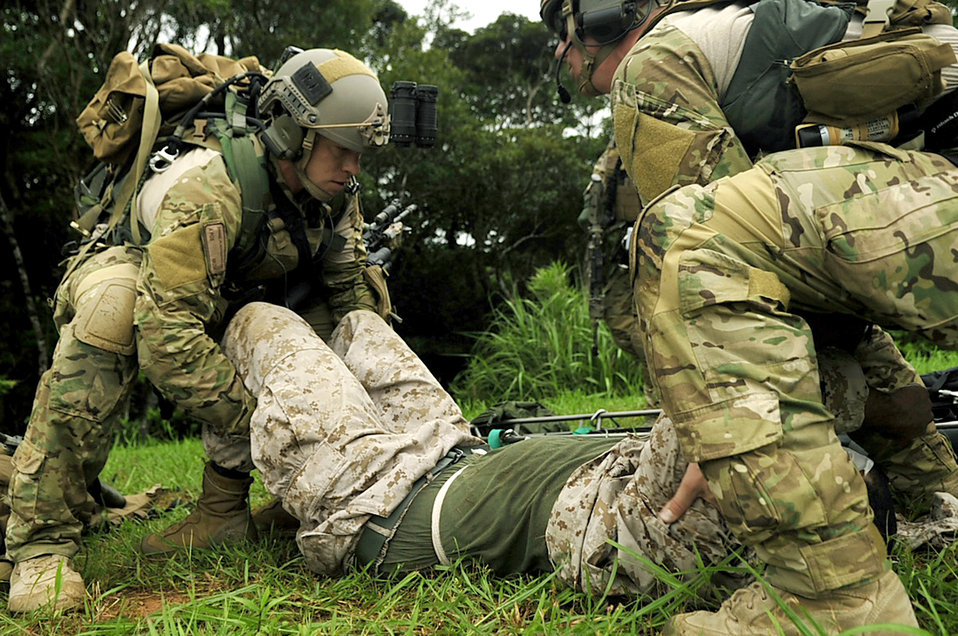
Airmen learn essential skills during joint combat training exercise

Senior Airmen Daniel Flechsenhaar (left) and Andrew Nichols move a simulated wounded Marine on to a litter during a joint combat training exercise July 28, 2010, at Kadena Air Base, Japan. The Airmen are pararescuemen from the 31st and 33rd Rescue Squadrons.